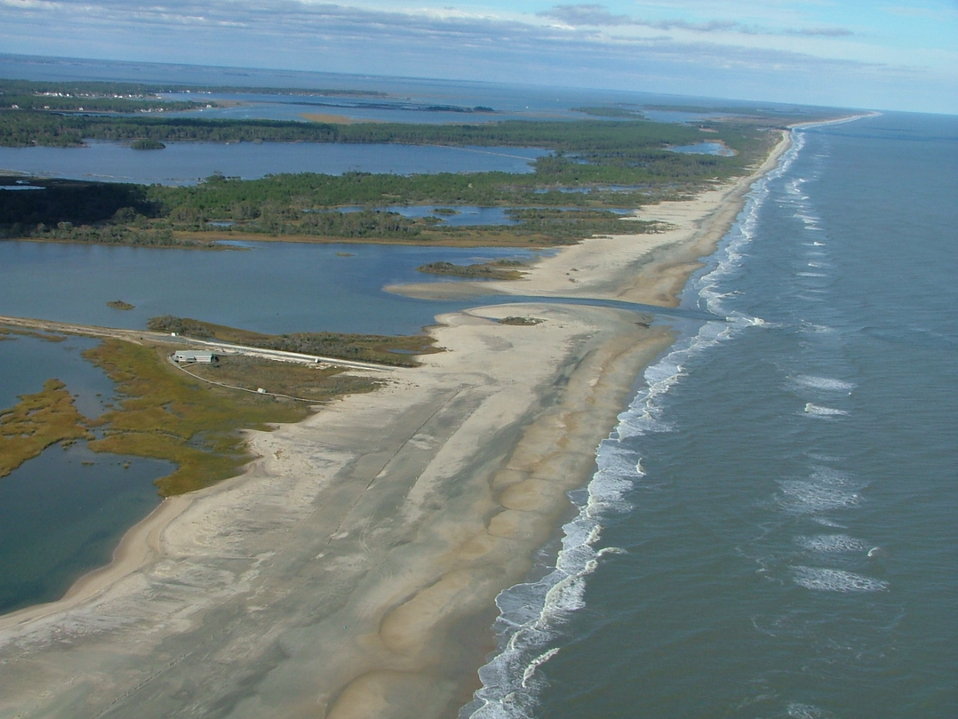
Effects of storm surge, Chincoteague National Wildlife Refuge (VA)

The storm surge overwashed the beach parking lots. The building in the photo is the Tom's Cove Visitor Center.